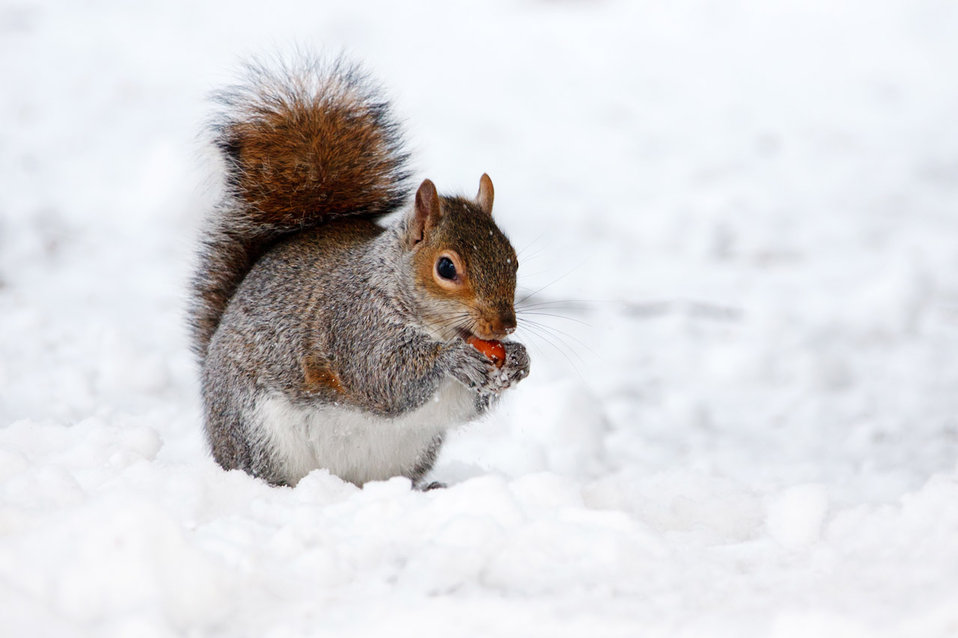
Squirrel in winter

Squirrel eating a hazelnut in snow in winter.